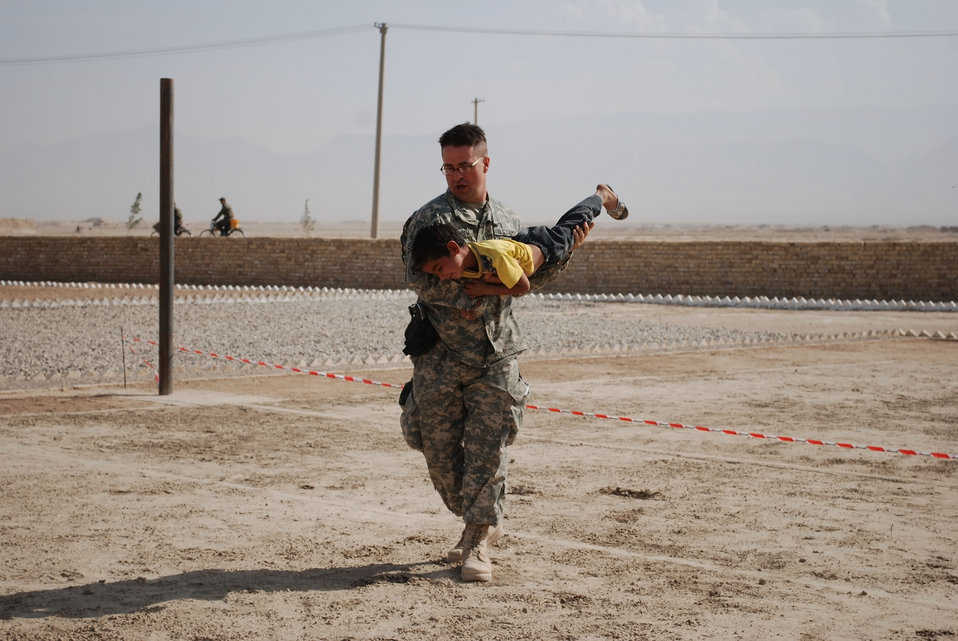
'On the Road' in Balkh Province